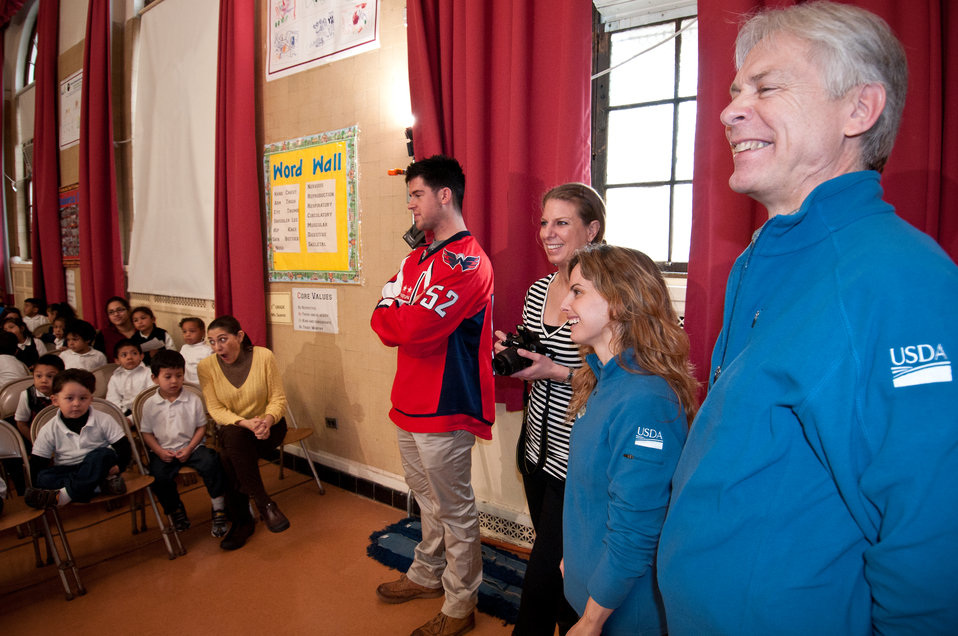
The People’s Garden team for W. B. Powell Elementary School, (consisting of the Washington Capitols, U.S. Department of Agriculture and D.C. Public Schools in Washington, D.C.) were thanked for their work after they revealed to 289 parents and students, the School Garden Design Concept on Thursday, March 10, 2011. The team was encouraged to come back soon to continue with the next phase of the project. The design draft was created by Forest Service landscape architect Matt Arnn, with the support of Natural Resources Conservation Service landscape architect Bob Sneickus (right), Outreach and Education Coordinator Annie Ceccarini (second from right) and Project Manager Leslie Burks who worked with the Principal Janeece Docal and the school during an earlier visit to develop illustrated ideas from parents and students. Representing the Washington Capitols is Defenseman, Number: 52 Mike Green (standing left), Comcast SportsNet Analyst Alan May and Director of Community Relations Elizabeth Wodatch (third from right).